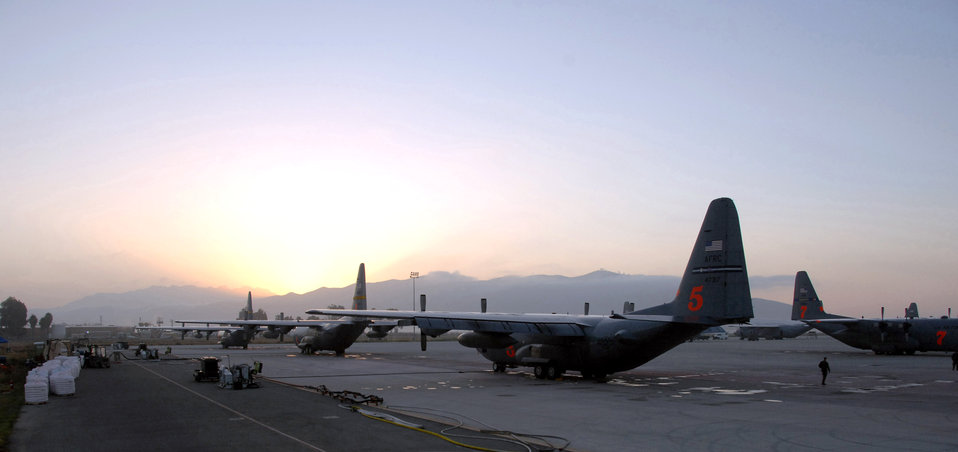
Ready to go

C-130's at Channel Islands Air National Guard Station in Southern California stand ready Oct 30 for another day of service in support of suppressing the California wildfires. The aircraft, equipped with the Modular Airborne Fire Fighting System have come with crews and pilots from four states.